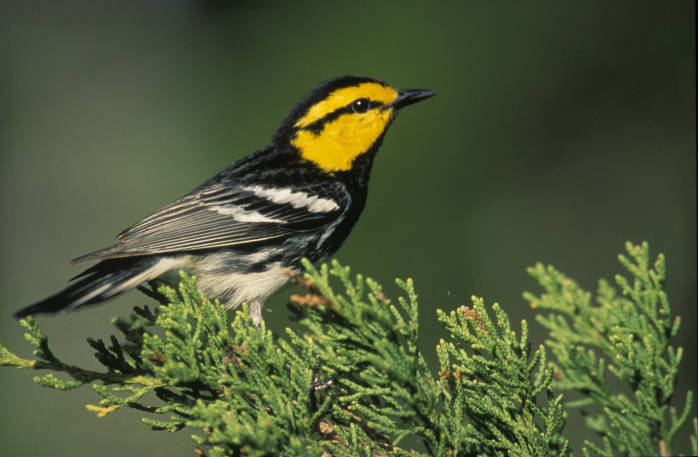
golden-cheeked warbler